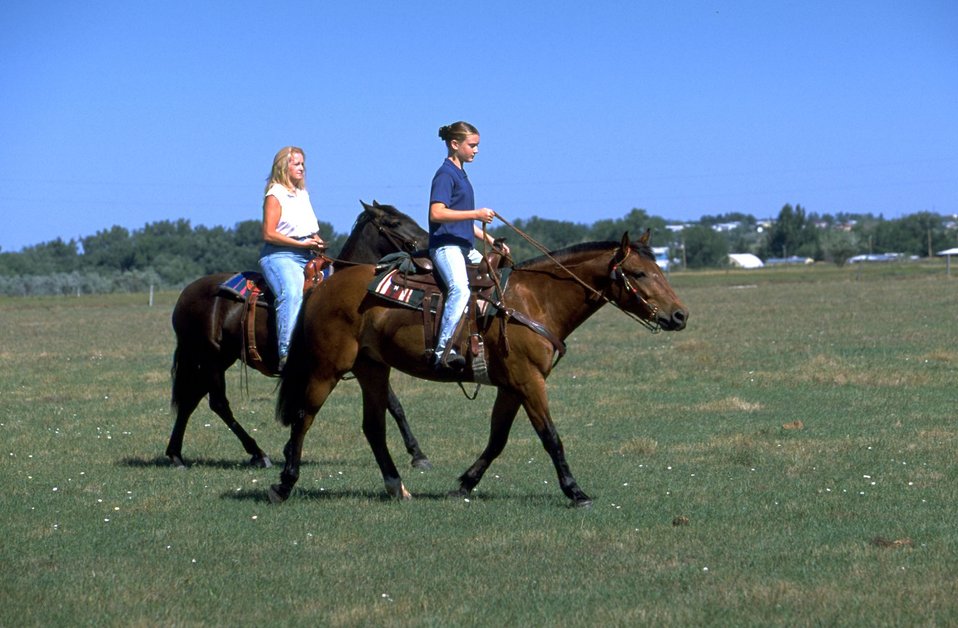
Trail Ridng on adopted Horses